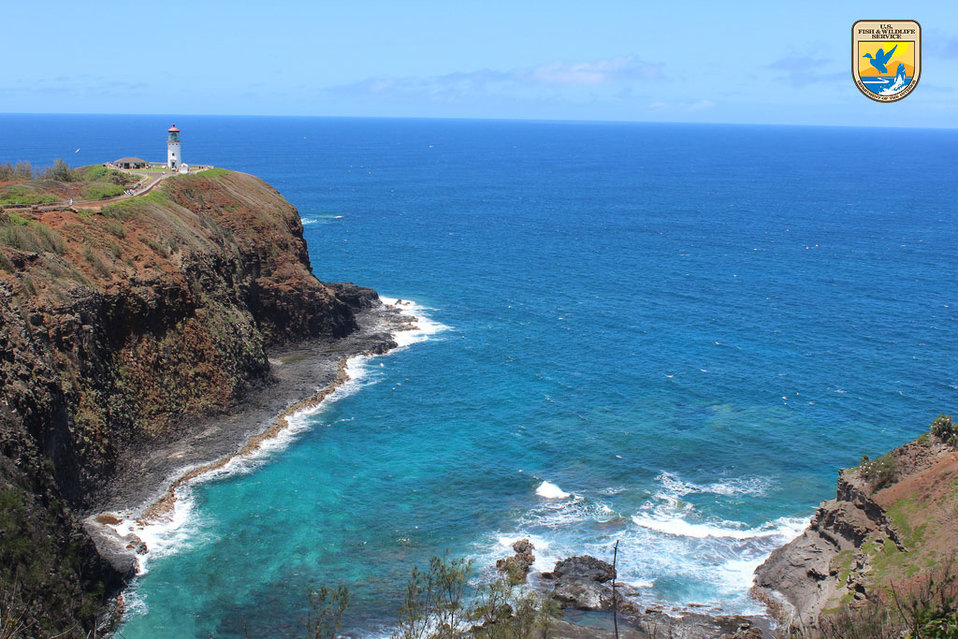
Daniel K. Inouye Kilauea Point Lighthouse - Pacific Region

The Kilauea Point National Wildlife Refuge is home to the endangered nene (Hawaiian goose), endangerd Newell's shearwater, seabirds like the Laysan albatross and Red-footed booby.